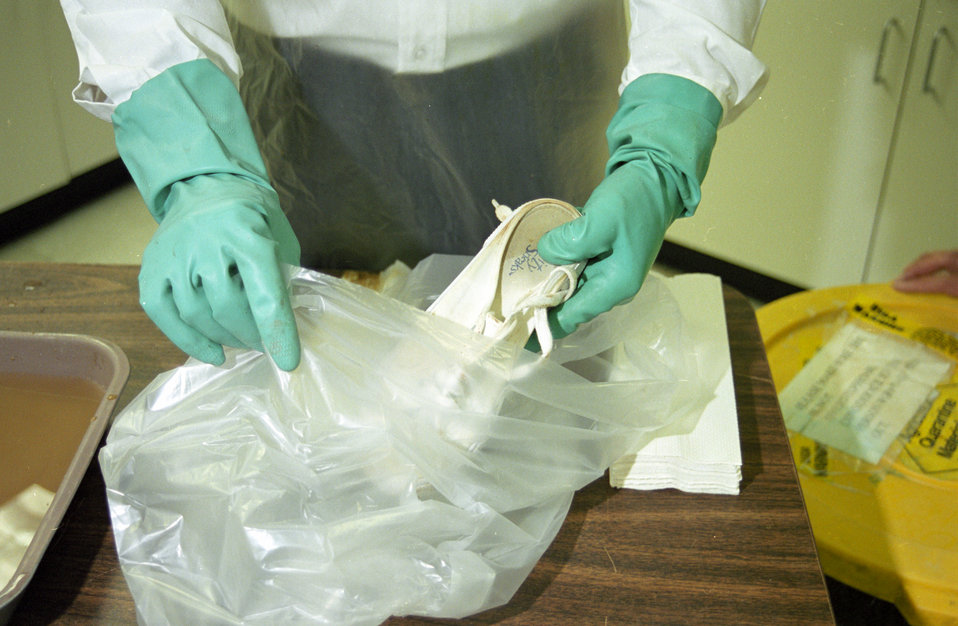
U.S. Department of Agriculture (USDA) Animal and Plant Health Inspection Service (APHIS) inspector places a pair of disinfected shoes in a plastic bag at Washington Dulles International Airport in Chantilly, VA., on March 14, 2001. Foot and Mouth Disease can be brought into the U.S. through contraband food and from travelers’ shoes. American tourists and European visitors that have trod through contaminated fields risk bringing the devastating disease into this country. USDA’s APHIS inspectors working with U.S. Customs and Border Protection carefully monitor incoming visitors and returning American tourists.